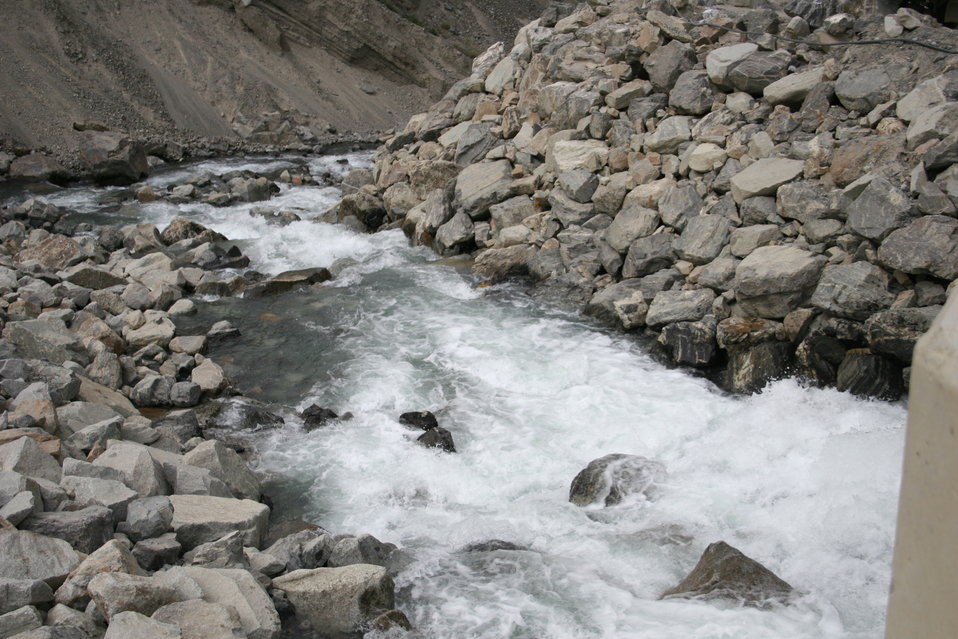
Satpara